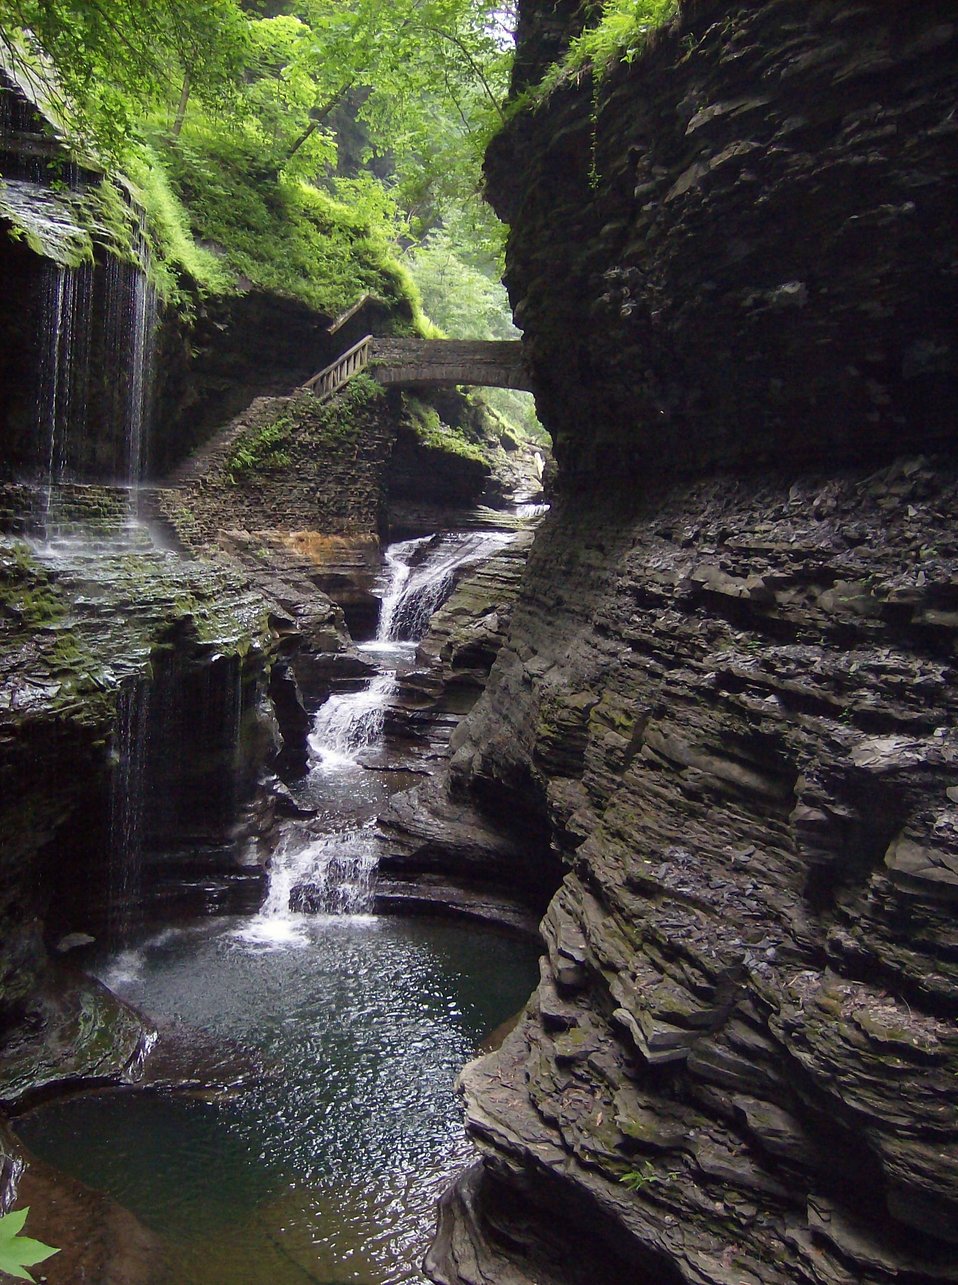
Stream, waterfall, pools, and lush green foliage at Watkins Glen State Park.